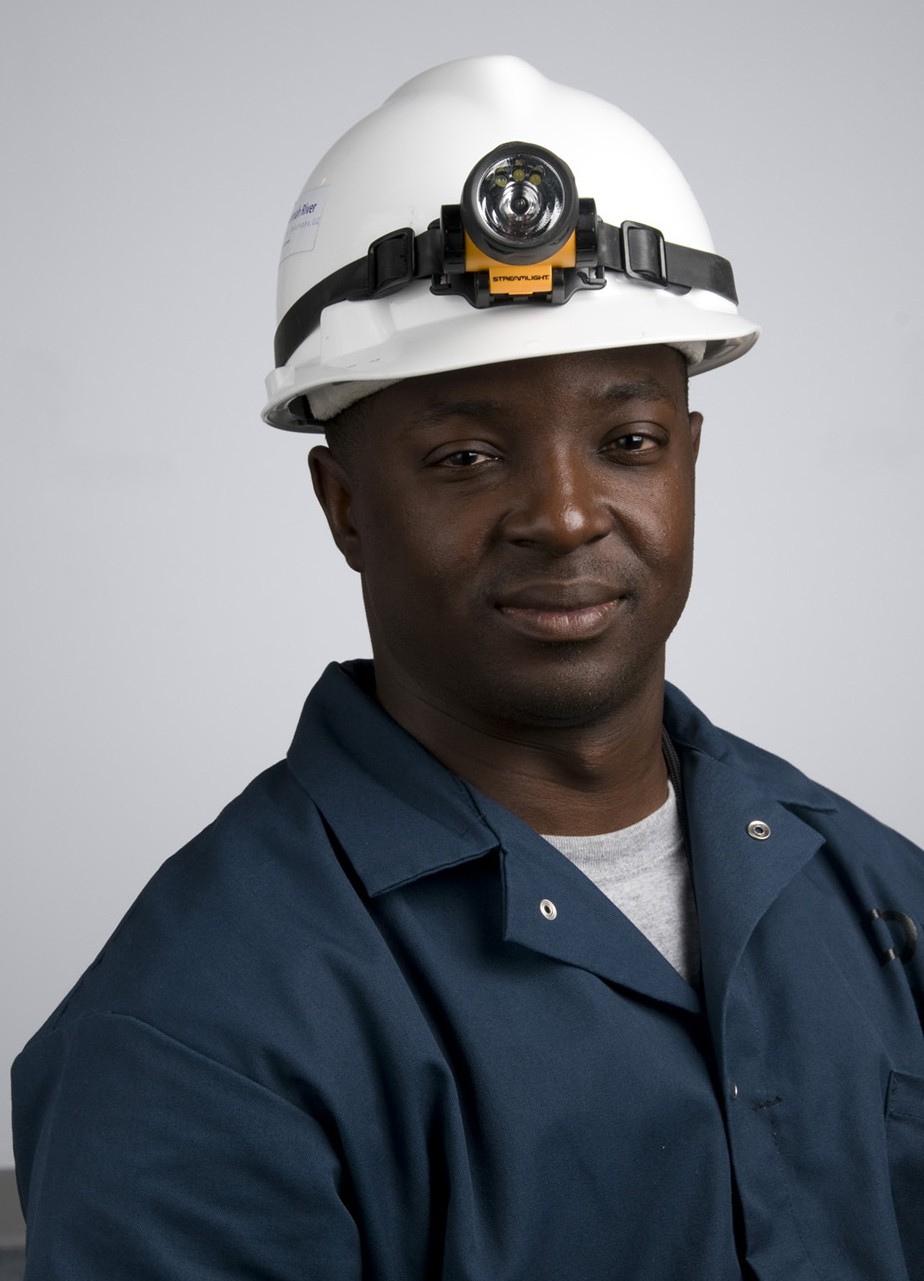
Jamie Bing